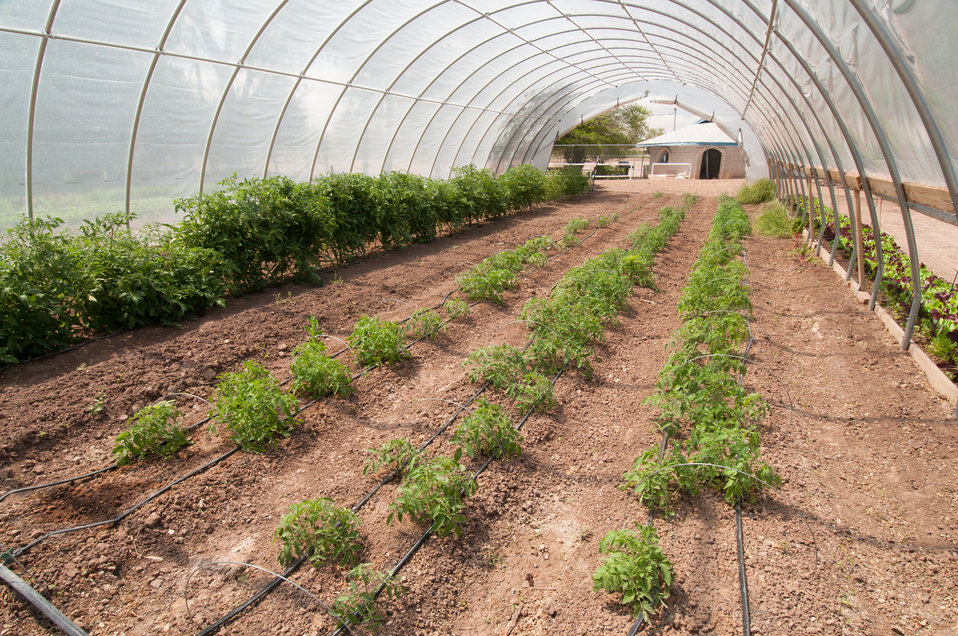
Local produce such as tomatoes and peppers are grown by Los Jardines Institute Farm, Albuquerque, NM. Los Jardines Institute Farm, a local sustainable farm, was able to construct a high tunnel house with a loan from the La Montanita Co-op. La Montanita Co-op offers loans to local farmers and food producers for development. La Montanita Co-op is a 17,000 member socially responsible, locally owned food cooperative that supports a stable market for local farmers and producers of sustainable and organic regional/local agriculture in Albuquerque, NM. The co-op has a distribution center and two stores in Albuquerque; Valley and Nob Hill and stores in Santa Fe and Gallup, NM.